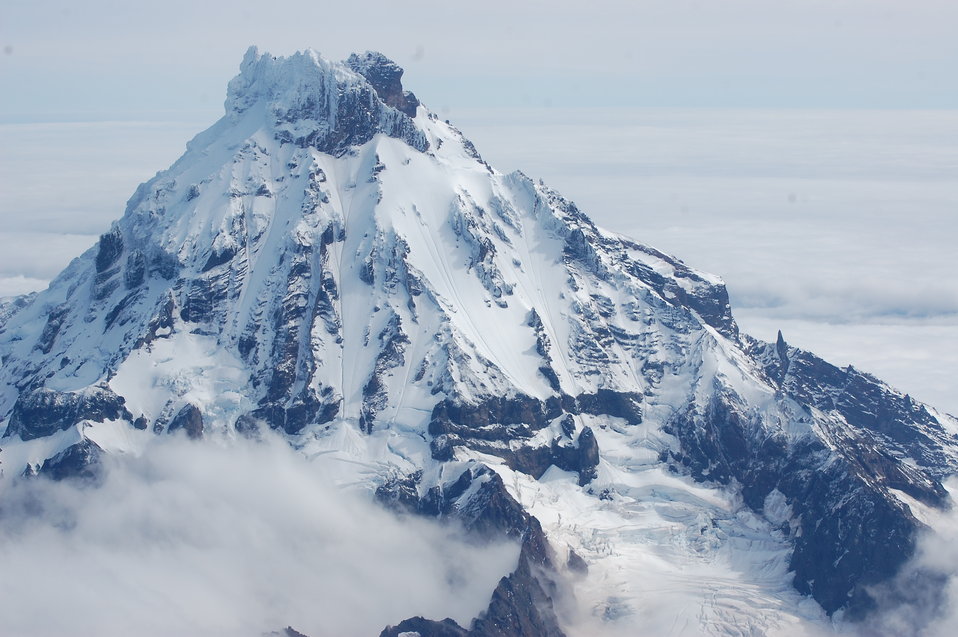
Isanotski Volcano

Unimak Island, Alaska Maritime National Wildlife Refuge